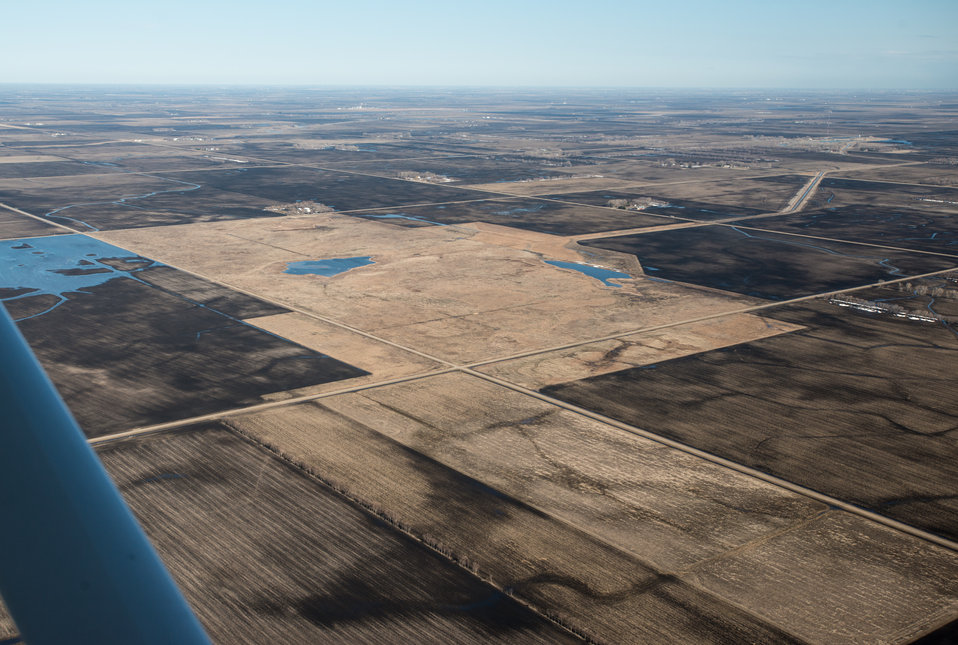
Vertin, U.S. Department of Agriculture (USDA) Natural Resources Conservation Service (NRCS) Wetland Reserve Program (WRP) in Wilkin County, MN, on Tuesday, April 30, 2013. For information about this and other programs from the USDA Red River Basin Initiative (RRBI) please see www.mn.nrcs.usda.gov/news/features13/RRBI.html.